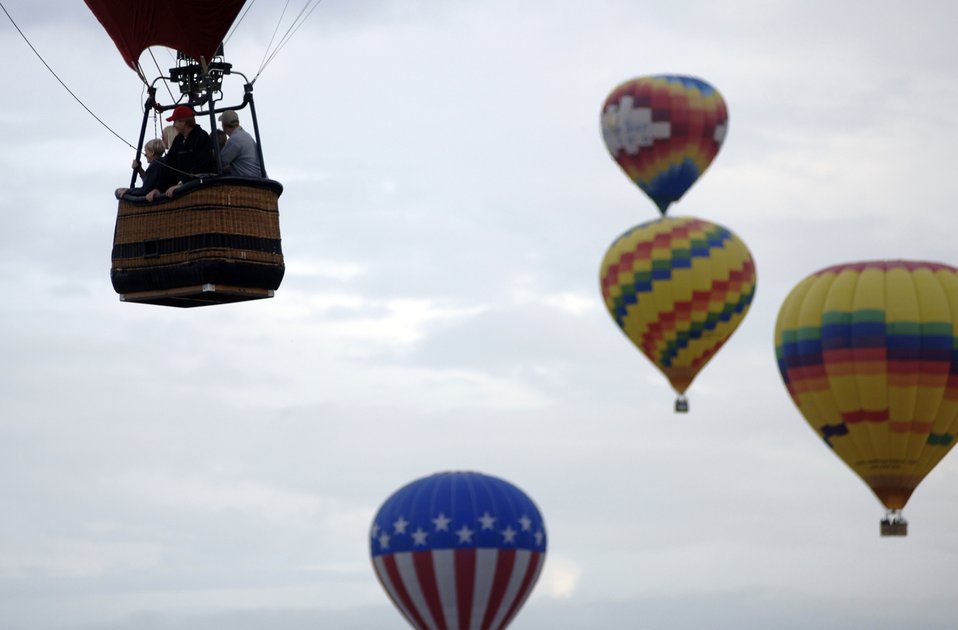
Mass ascension

A local Albuquerque family participates in the first mass ascension over Fiesta Park during the Balloon Fiesta at Albuqerque, New Mexico, Oct. 7, 2006. Balloon Fiesta is a world-renowned New Mexico attraction where several hot air balloons have been flying over Albuquerque for the last thirty five years.